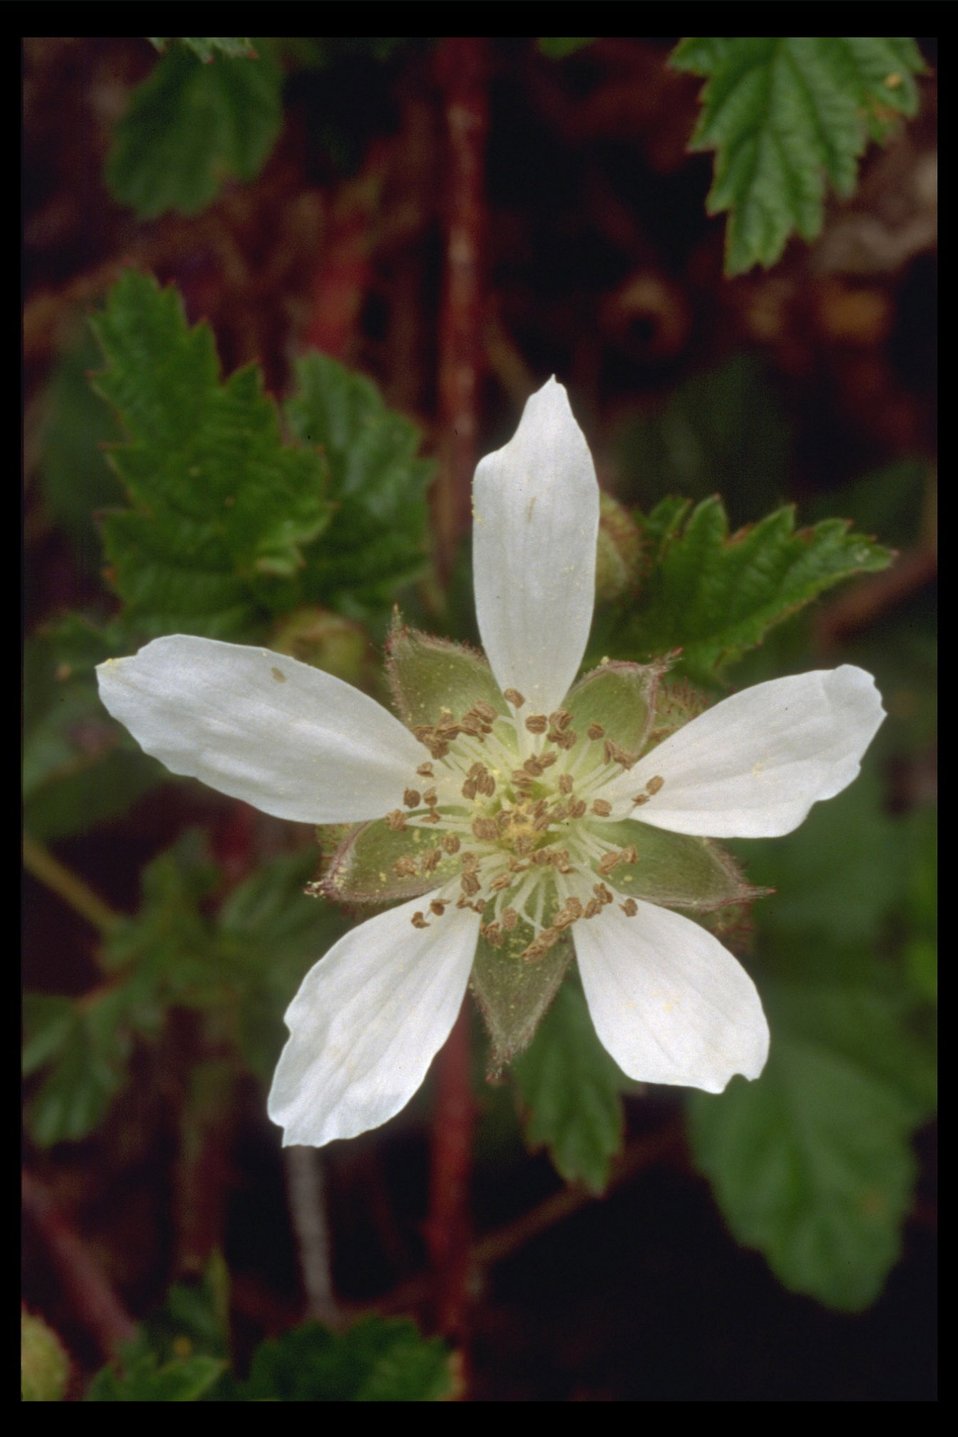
Wild Blackberry (Rubus ursinus) along the West Fork Evans Creek.